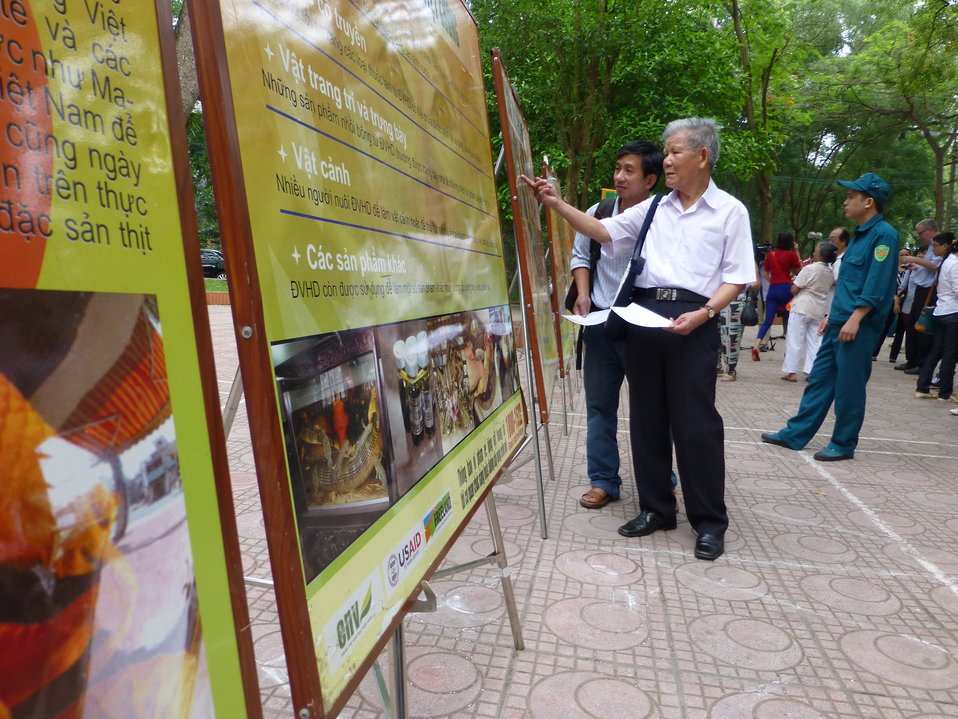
USAID Supports International Day for Biological Diversity in Hanoi